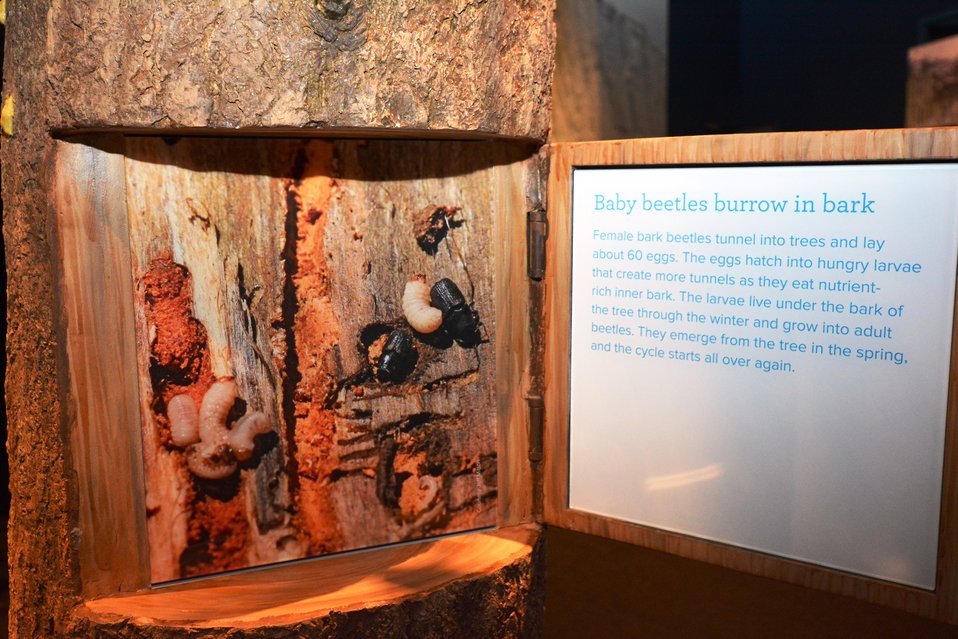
Mountain Pine Beetle display at the History Colorado Center in Denver, CO on May 20, 2014.